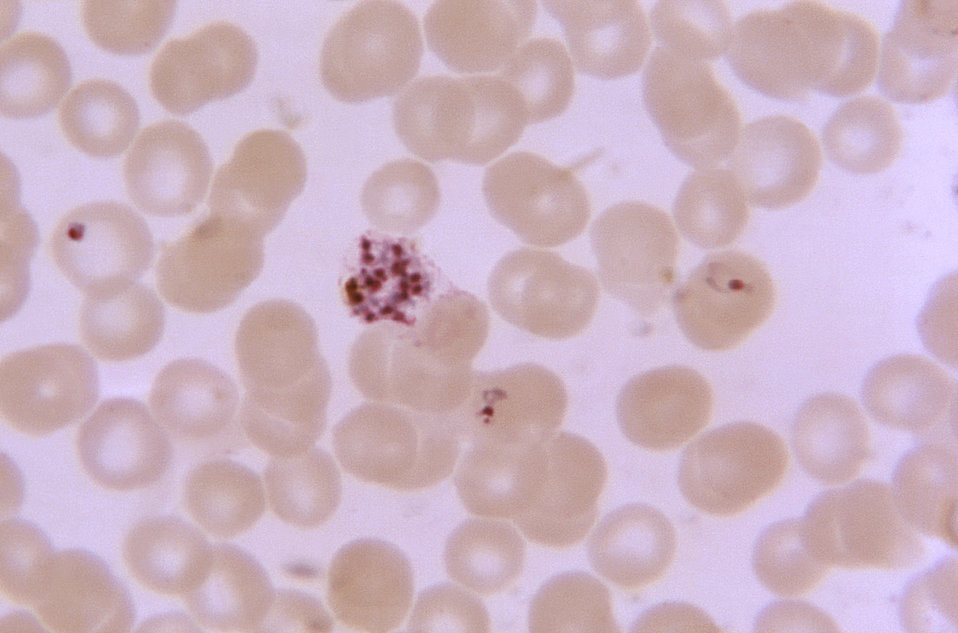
Magnified 1125X, this thin film blood smear micrograph depicts an mature Plasmodium vivax schizont with 14 chromatin masses.